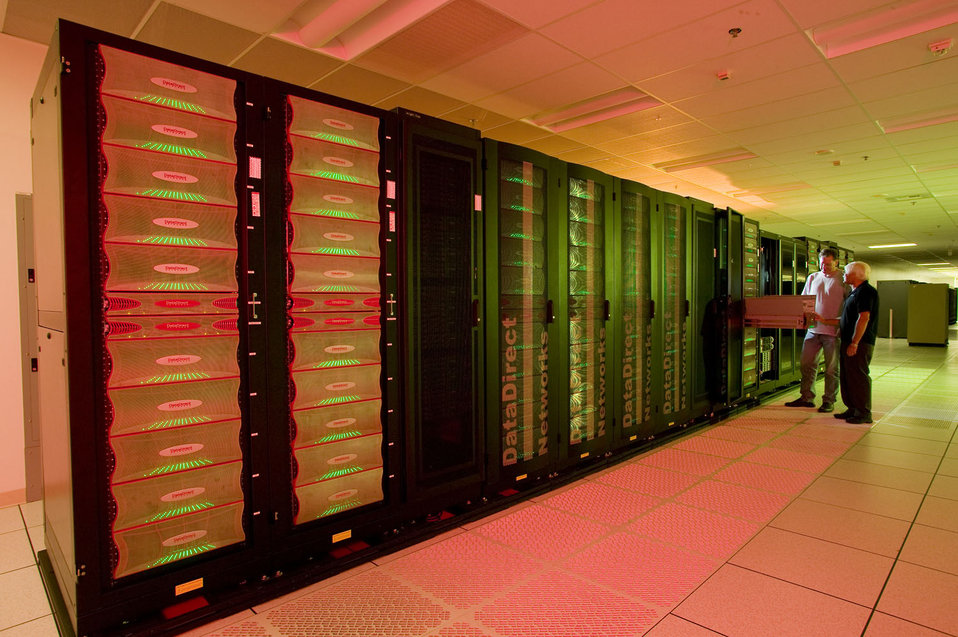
Lance Weems and Keith Fitzgerald tend to Dusk, the global parallel file system for Dawn, a 500-teraflop (trillion floating operations per second) supercomputer at Lawrence Livermore National Laboratory.

Many of Lab's supercomputers are used to simulate the conditions inside a nuclear weapons. The computers also are used for earthquake simulations and climate change models.